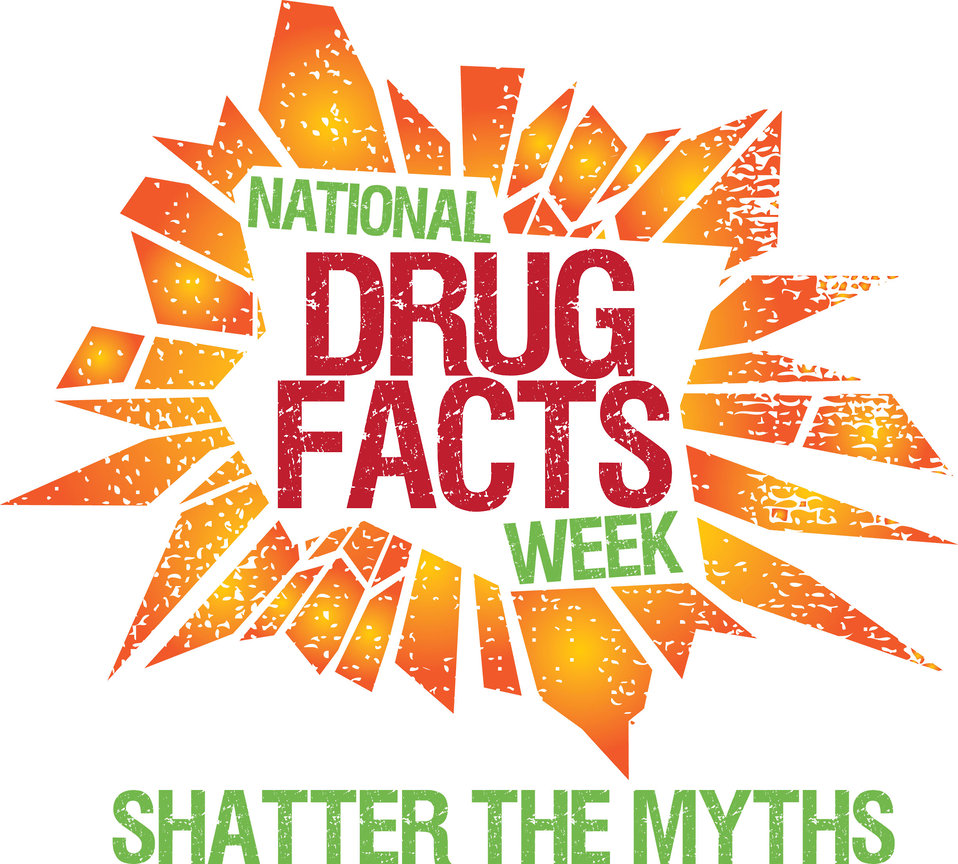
NDFWLogo WTag

NDFW logo